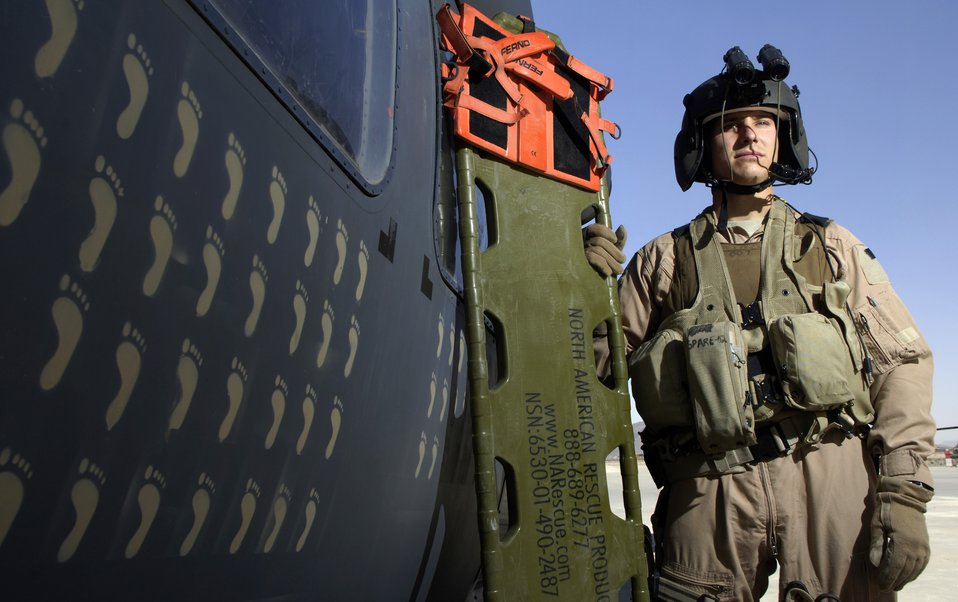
Air Force aids Army with medevac missions

Tech. Sgt. Mark De Corte is an aerospace evacuation technician with the 33rd Expeditionary Rescue Squadron in Kandahar, Afghanistan. The tan feet painted on the side of this HH-60 Pavehawk helicopter represent each of the saves the squadron has flown. The 33rd ERQS is the first squadron to have a combat-search-and-rescue mission and a medevac mission.